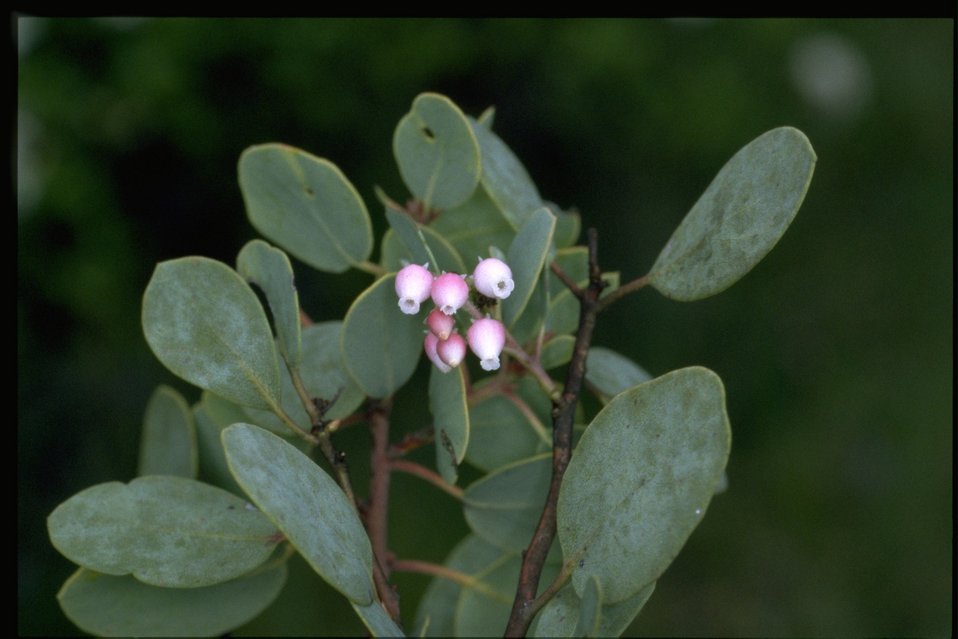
Closeup shot of Arctostaphylos viscida.